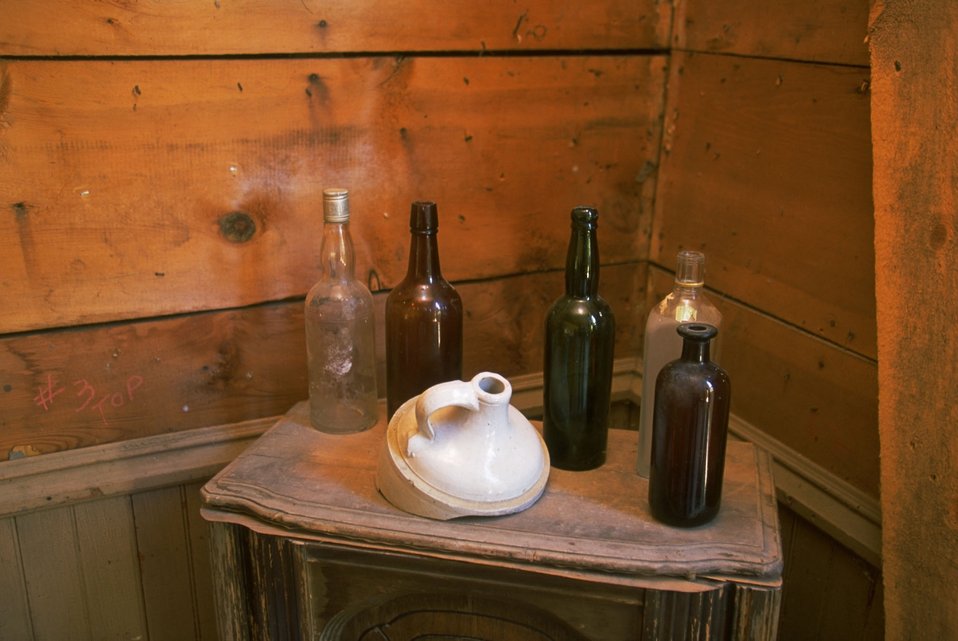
Historic artifacts inside Kelley's Saloon at Garnet Ghost Town